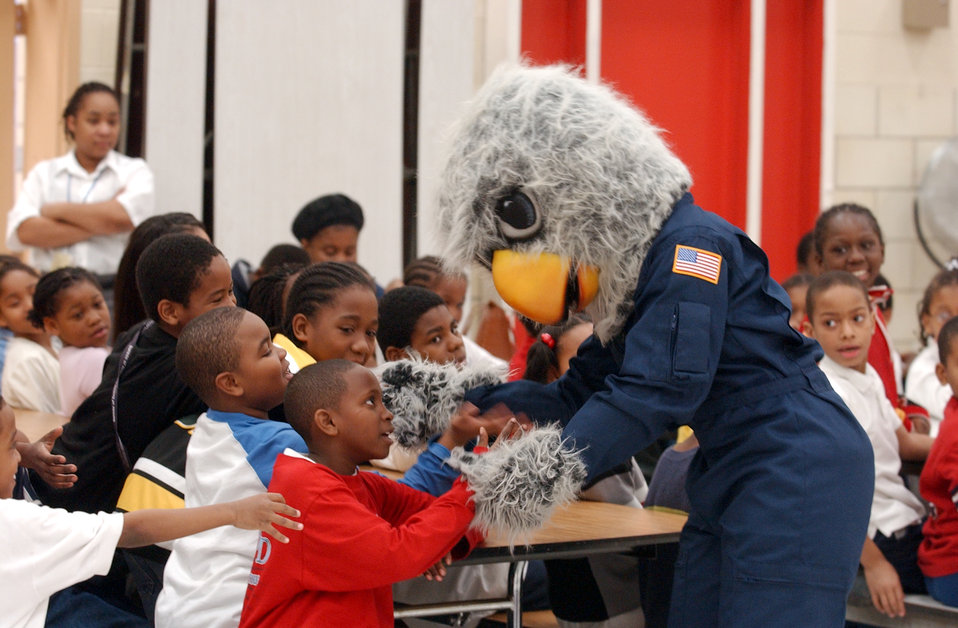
Operation Fly Straight

WASHINGTON --